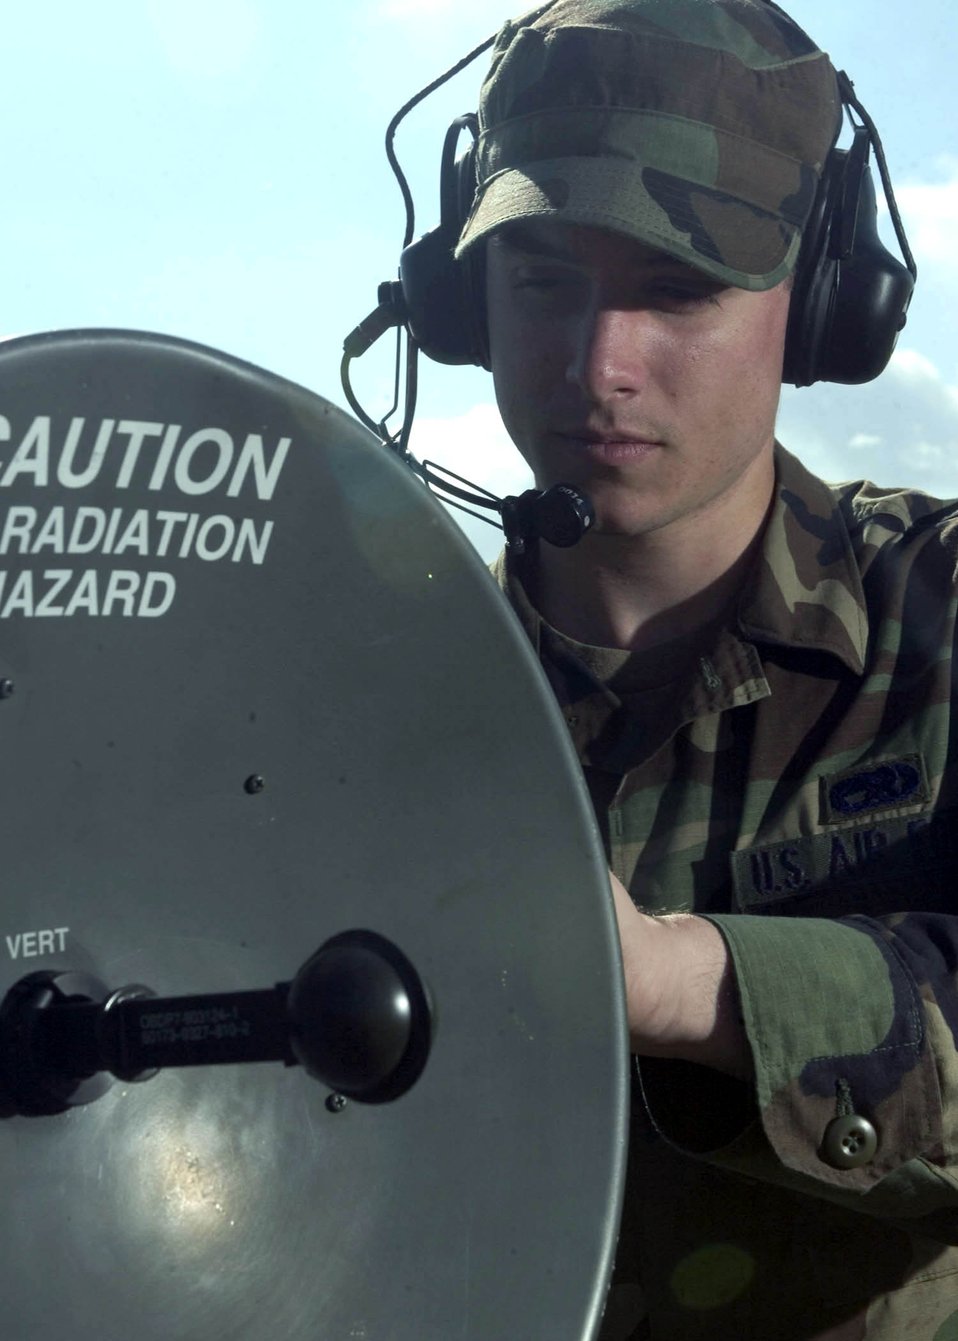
Getting ready

BITBURG AIR BASE, Germany -- Airman 1st Class James Howard works with communication equipment while supporting the 52nd Fighter Wing's tactical evaluation here. Airman Howard is a satellite wideband and telemetry systems maintainer with the 606th Air Control Squadron at Spangdahlem Air Base, Germany. About 150 people from the 606th ACS are here preparing for an air and space expeditionary force rotation supporting Operation Iraqi Freedom.